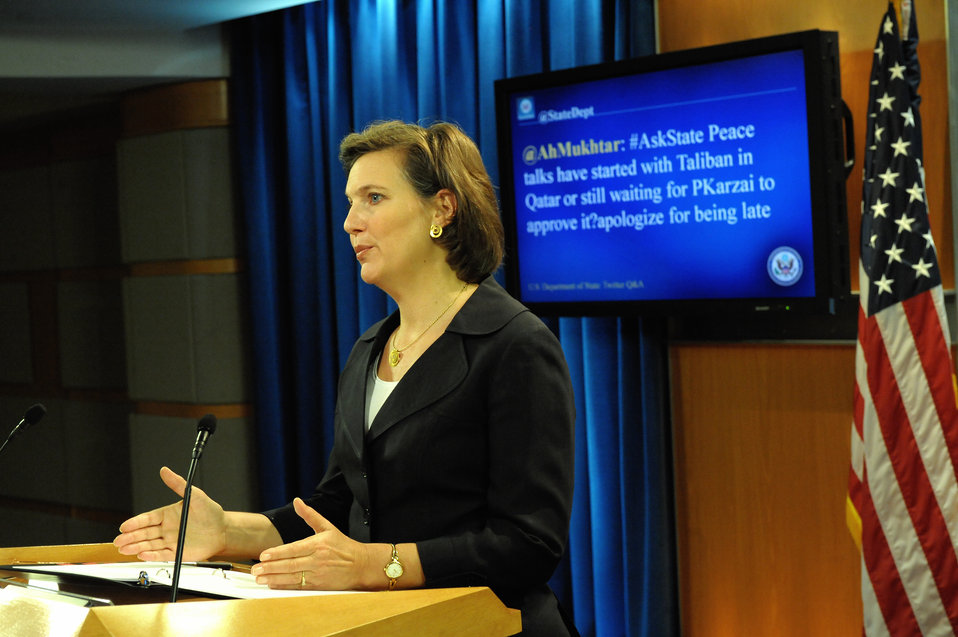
Spokesperson Nuland Responds to a Question from @StateDept

Victoria Nuland, Spokesperson for the U.S. Department of State, answers a question selected from the Department’s official English Twitter feed, @StateDept, on January 27, 2012.